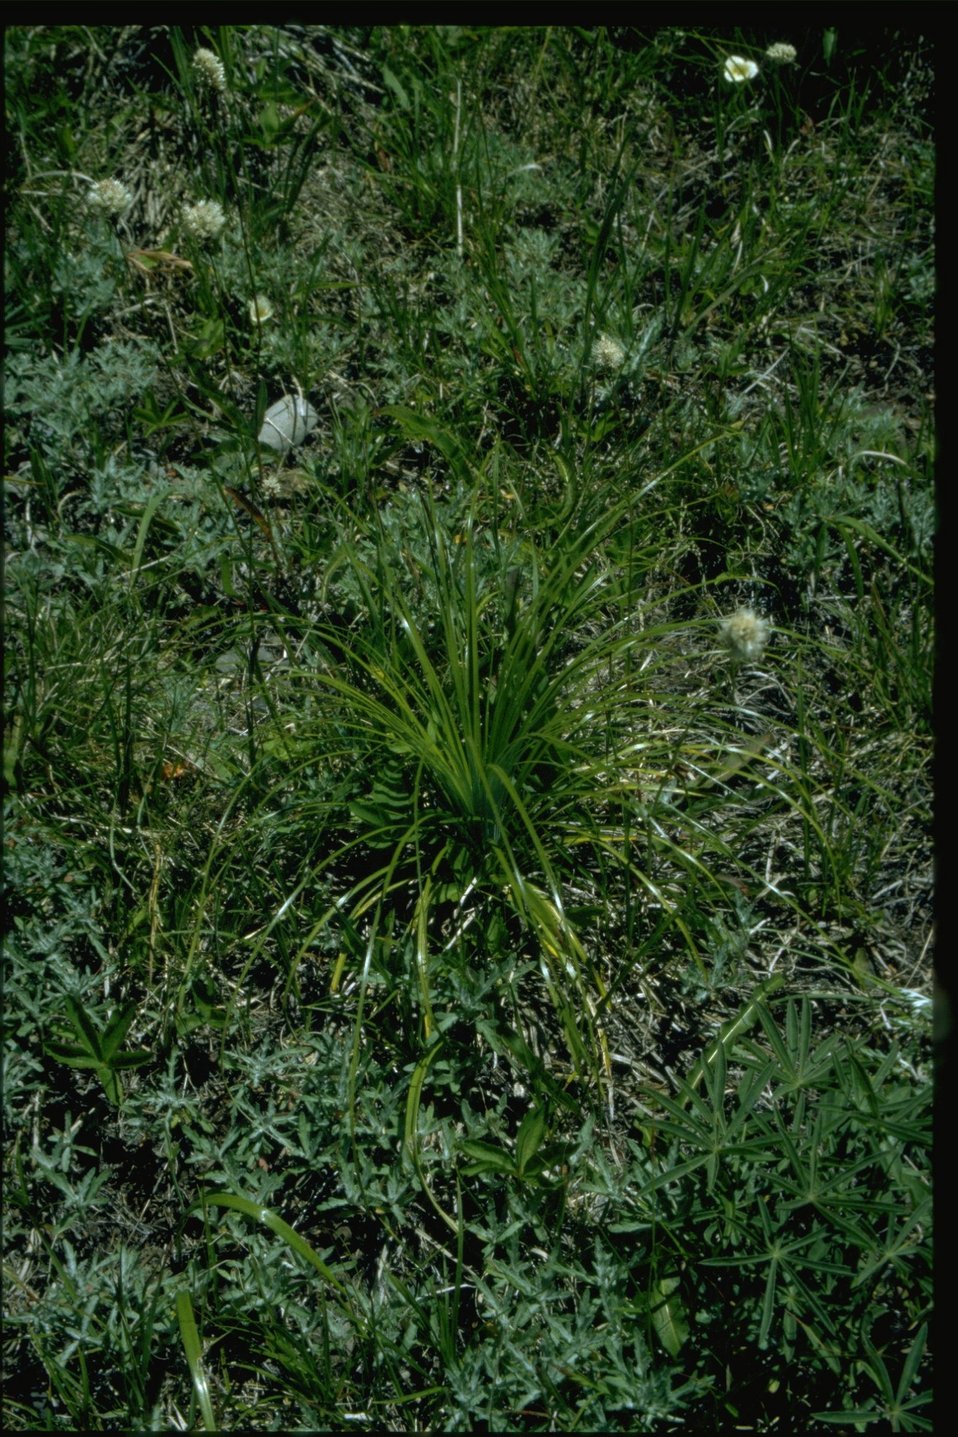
Medium shot of vegetation.